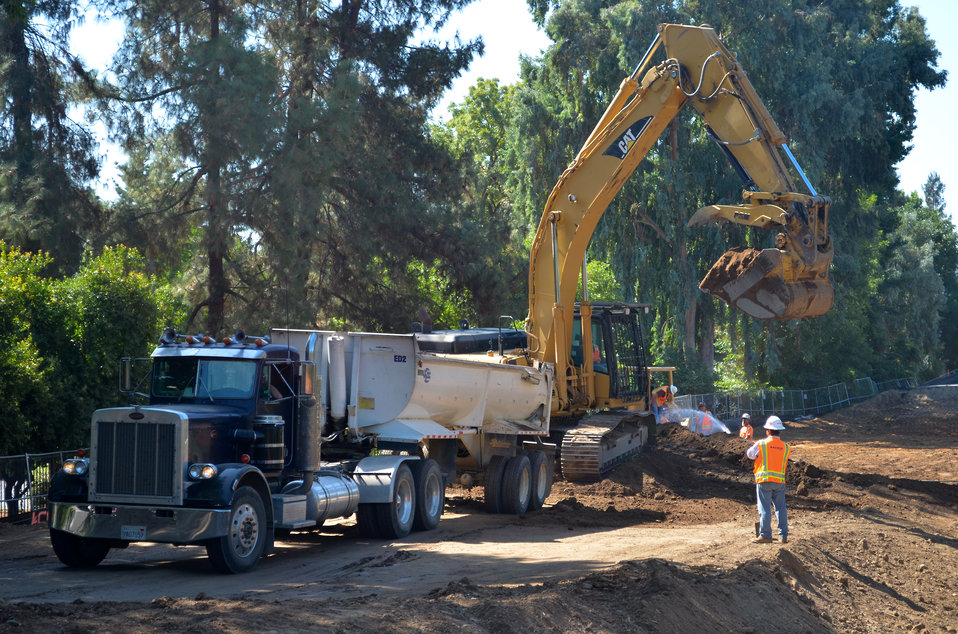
American River levee construction

Workers dig down through a levee on the American River in Sacramento, Calif., Aug. 31, 2011 to expose underground utility pipes. Under the American River Common Features, funded in part by the American Recovery and Reinvestment Act of 2009, the U.S. Army Corps of Engineers Sacramento District is installing a slurry wall in the levee to help strengthen it and make it harder for water to leak through. The wall must be poured around the pipes, making it one of the more difficult reaches of Sacramento levees to improve. The levee will be restored to its original height once work is completed, scheduled for October.